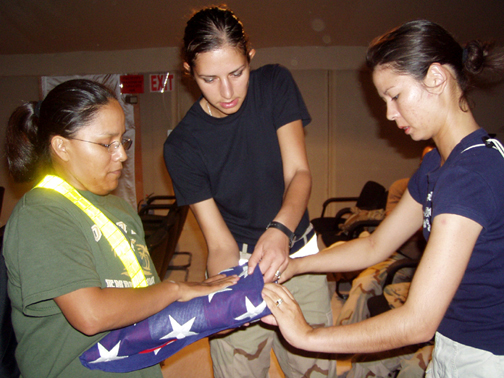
Pursuing dreams in Air Force

AL UDEID AIR BASE, Qatar -- Senior Airman Ivelina Konstantinova (center) helps Staff Sgt. Leandra Lee (left) and Airman 1st Class Ann Flaherty with flag-folding techniques during base honor guard practice here Oct. 1.